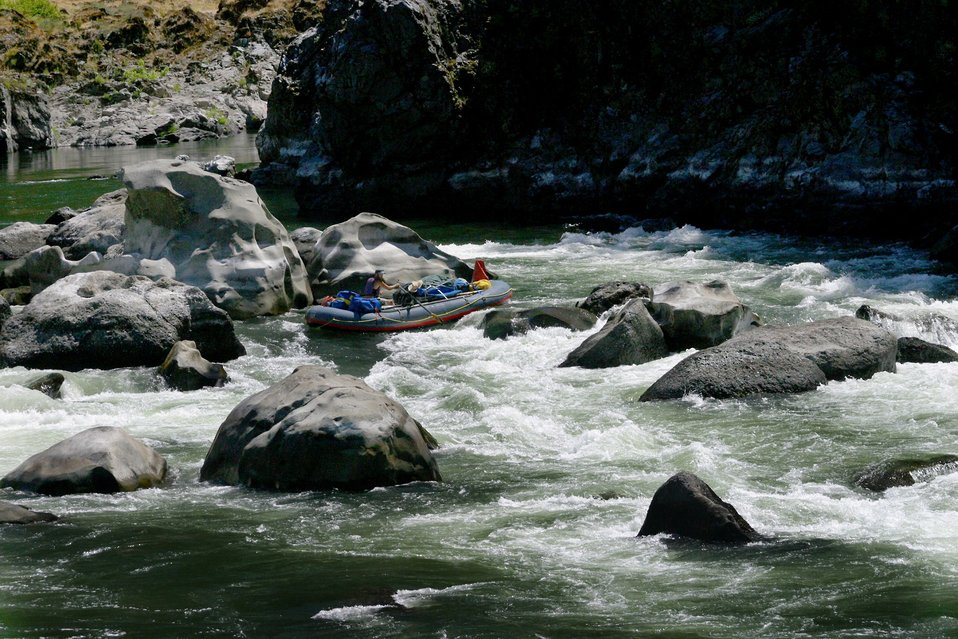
Boaters negotiate Blossom Rapids.